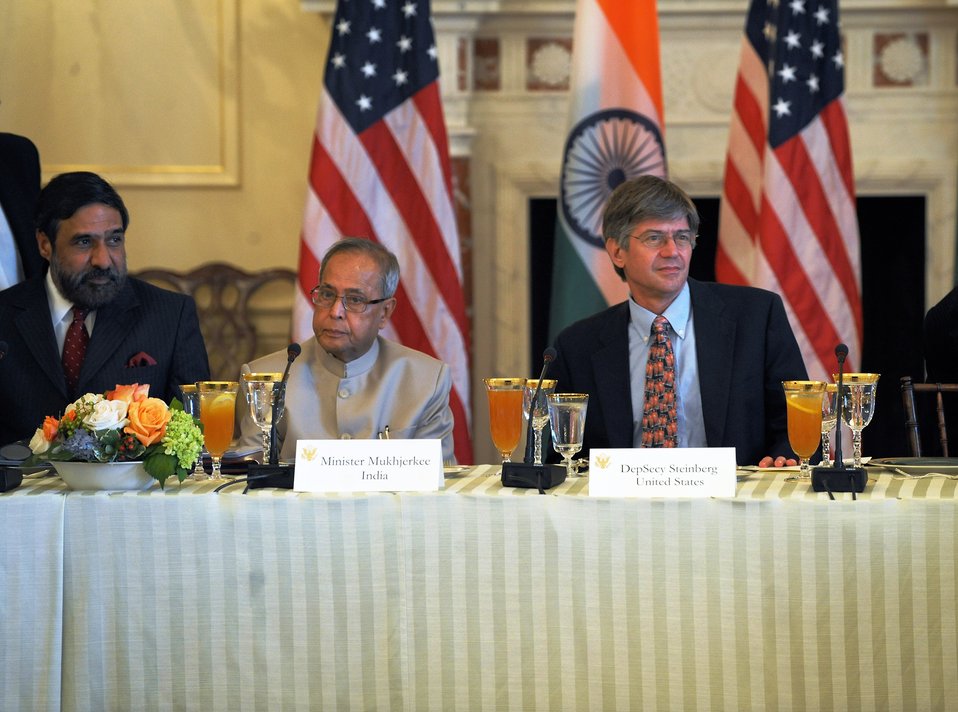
Indian Commerce Minister Sharma, Indian Finance Minister Mukherjee, and Deputy Secretary Steinberg Listen to Secretary Clinton's Opening Remarks

(Left to right): Indian Commerce Minister Anand Sharma, Indian Finance Minister Pranab Mukherjee, and U.S. Deputy Secretary James Steinberg listen to U.S. Secretary of State Hillary Rodham Clinton deliver the opening remarks at the U.S.-India CEO Forum at the U.S. Department of State on June 22, 2010.